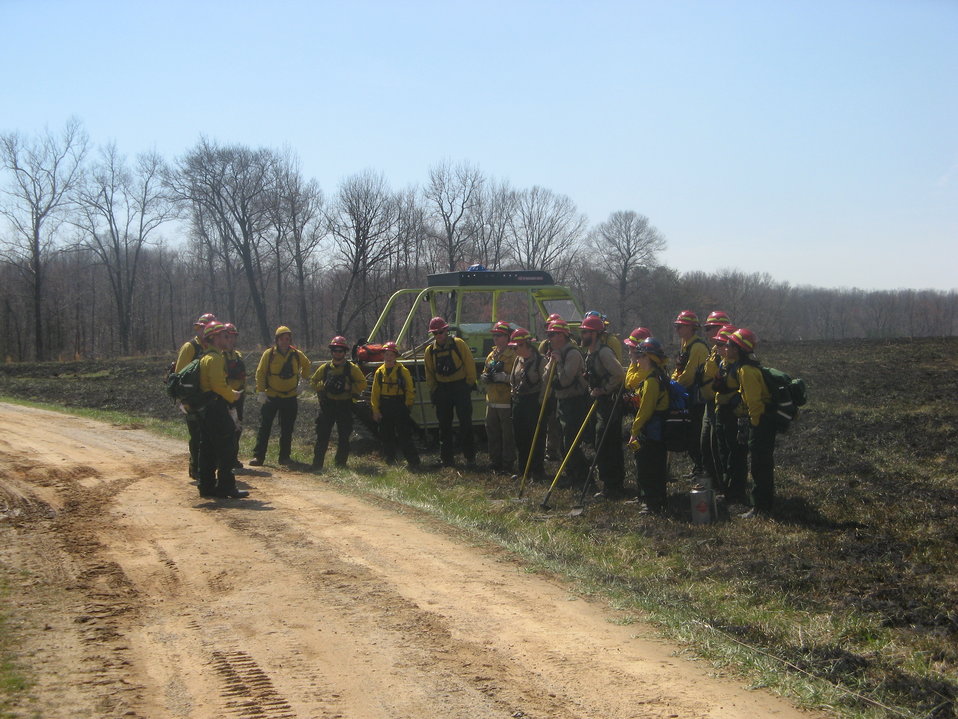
After action review

Laurel, MD: Firefighters congregate to review the day's events at a successful controlled burn at Patuxent National Research Refuge.